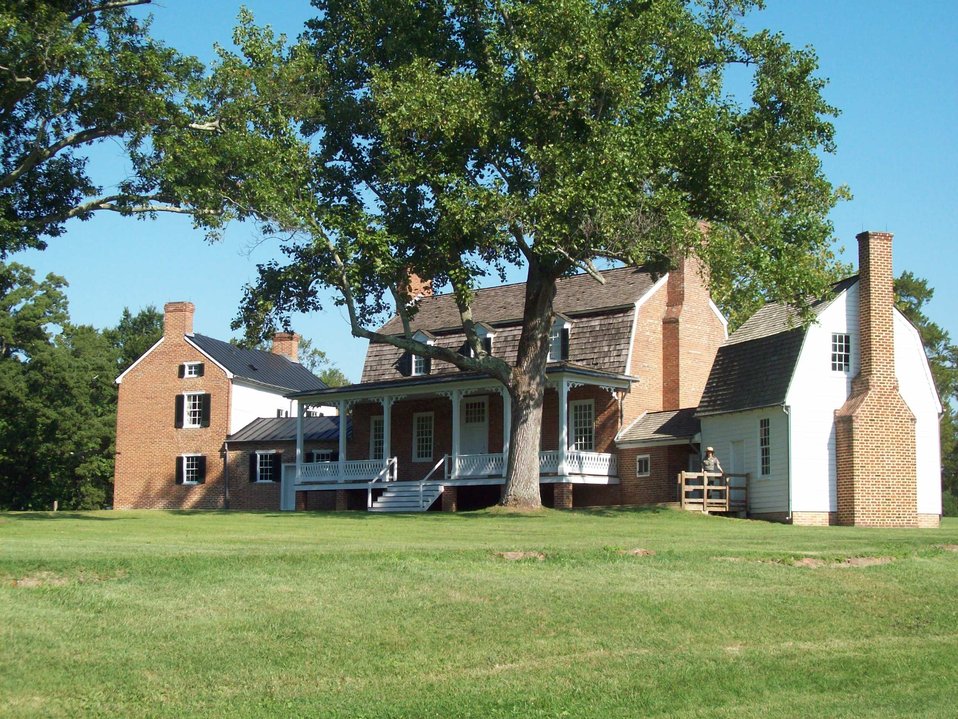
Habre de Venture, Front View, September 2009